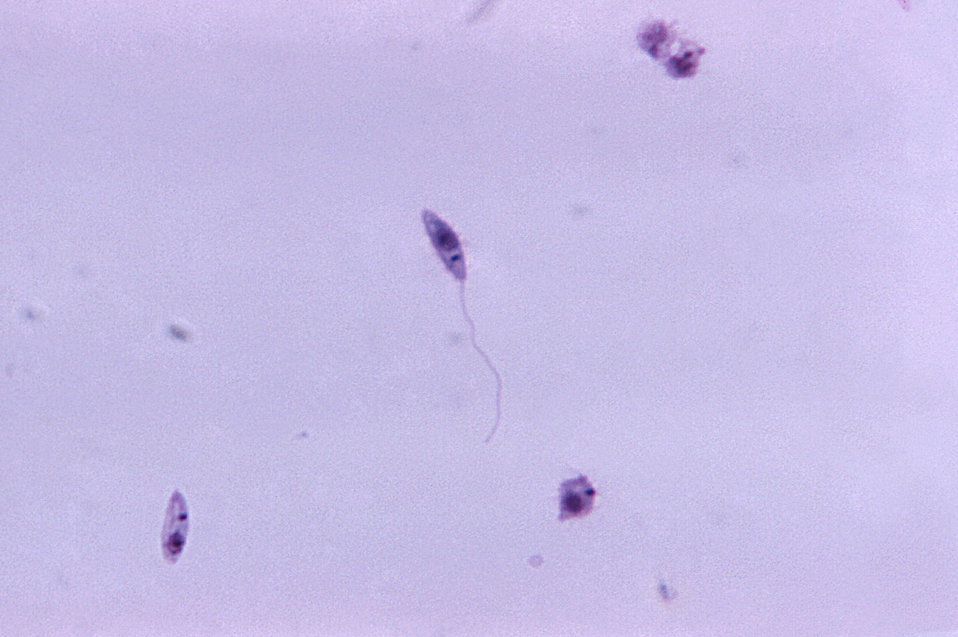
This micrograph revealed the presence of a number of leptomonad-staged, i.e. promastigote, Leishmania sp. protozoa.